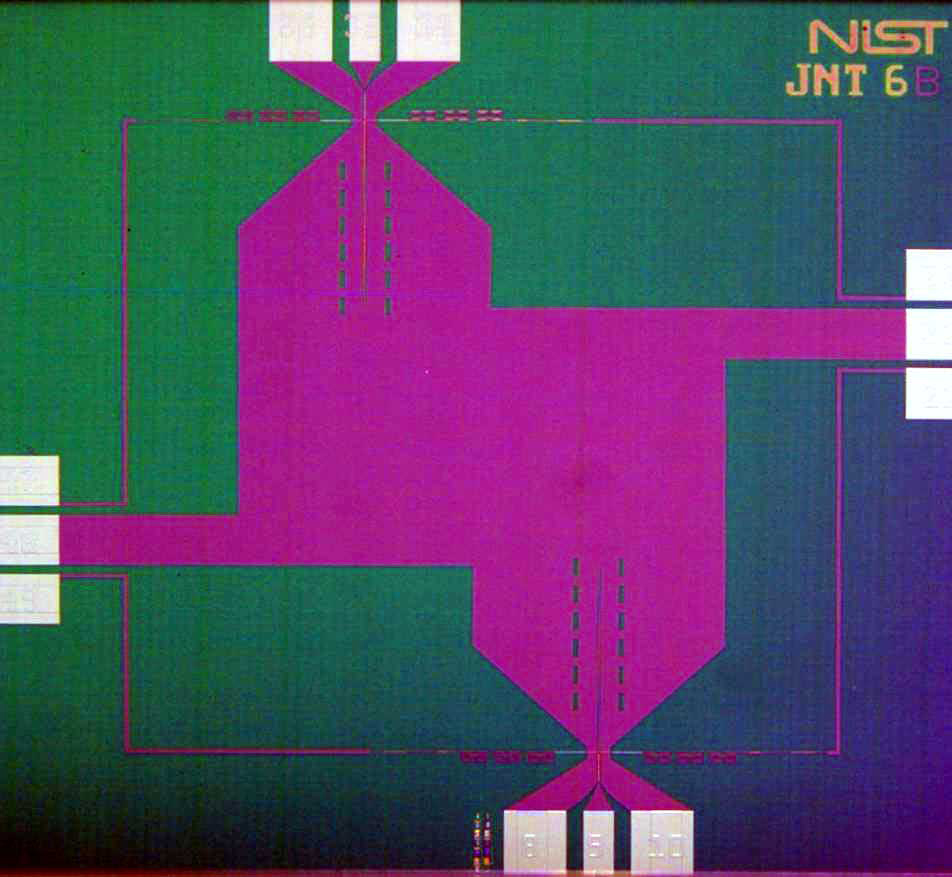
Johnson noise thermometry

Photograph of circuit used in NIST's Johnson noise thermometry system. The system relies on the 'noise' of jiggling electrons as a basis for measuring temperatures. It is extremely precise in part because it is based on the predictable quantum effects of superconducting elements located between the dashed slits on the top and bottom of the chip.